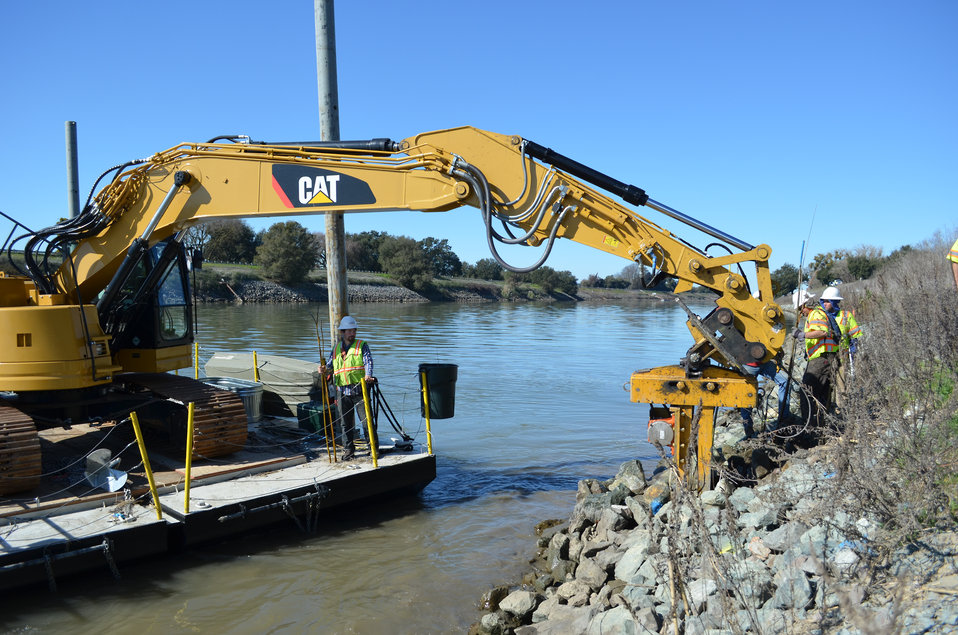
Planting willow poles along Sacramento River

Contract workers plant willow poles along the Sacramento River near Paintersville, Calif., Feb. 11, 2013, as part of a U.S. Army Corps of Engineers Sacramento District project to preserve riparian habitat following emergency levee erosion repairs between 2007 and 2009. The district worked with the U.S. Fish and Wildlife Service and National Marine Fisheries Service to design the project for habitat benefit, and is the first Corps district to receive a variance under the Corps’ levee vegetation policy to plant willows near the levee after engineering analysis showed they won’t threaten the levee. (U.S. Army photo by Randy Gon/Released) Watch the video: bit.ly/YkJgiq